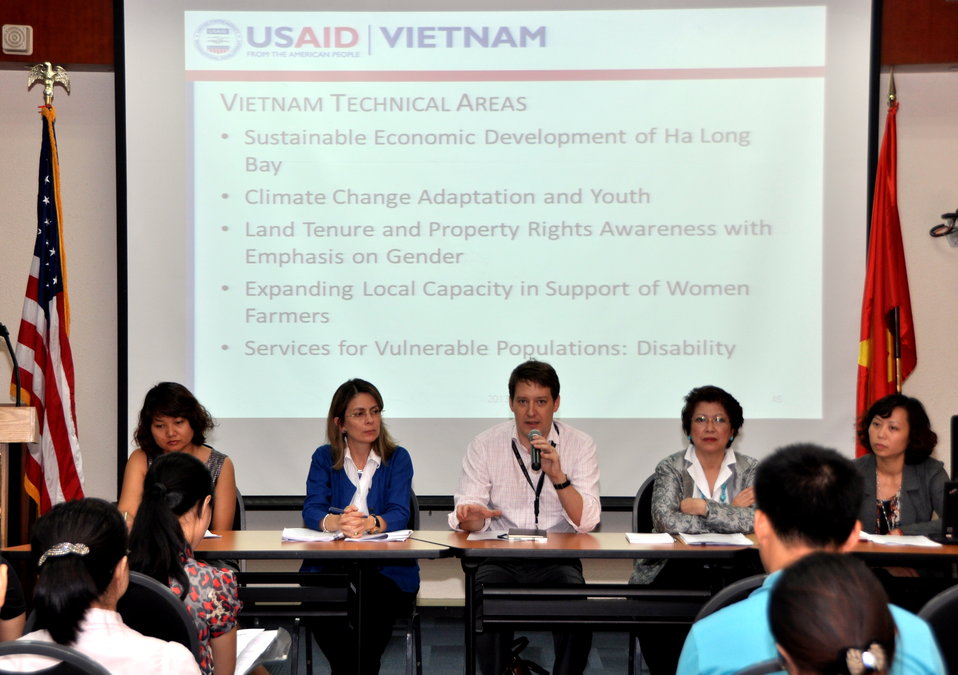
Development Grants Program Workshop in Hanoi

July 24, 2013